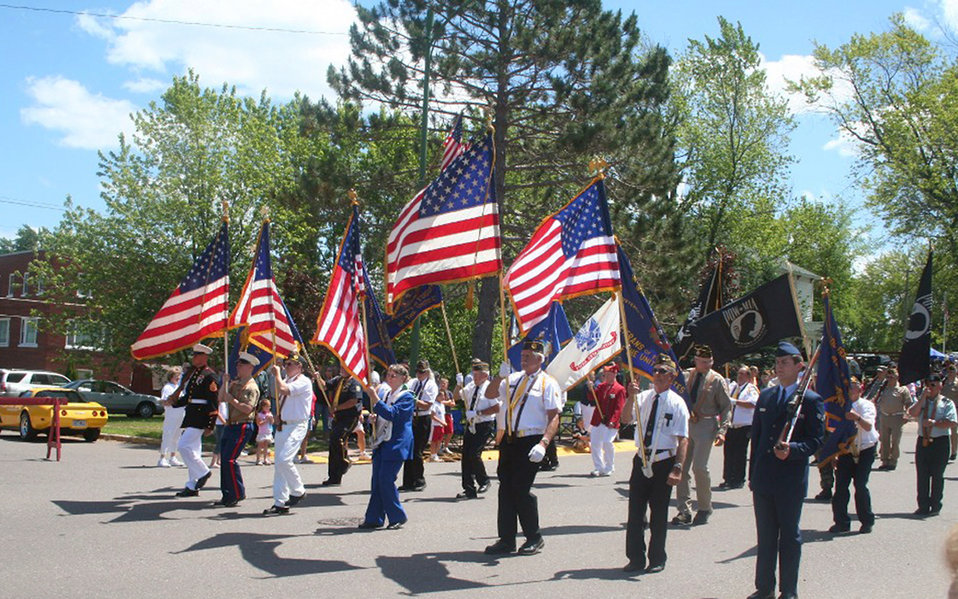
Fireworks light up the night...

A color guard leads a parade for Independence Day festivities in Wakefield, Mich., on July 4, 2009.